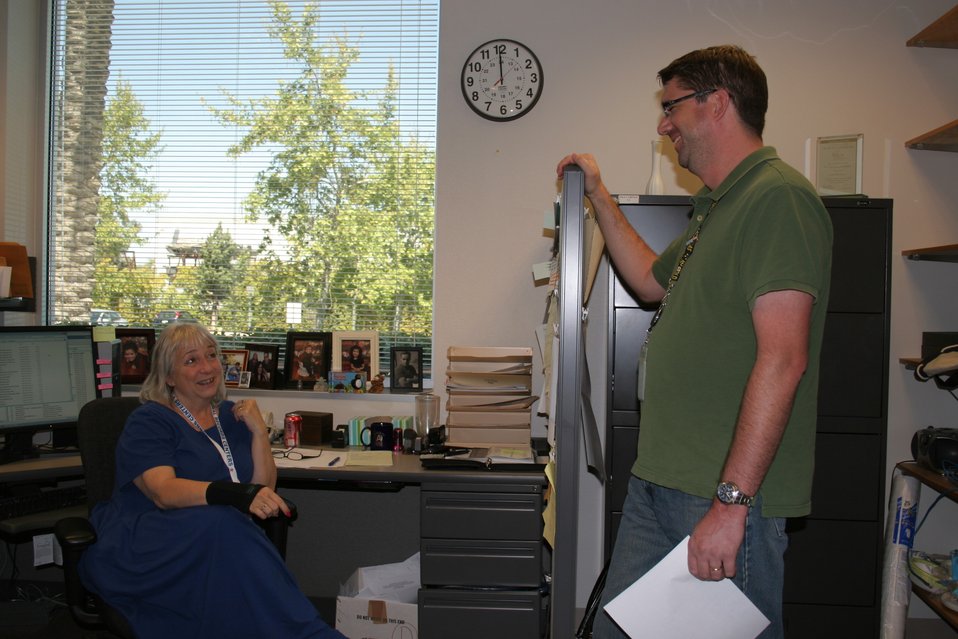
Business Support staff discuss new contracts - (l to r) Lynn R. Blackmer, Jason H. Reed; Location: Riverside Facility, Perris, CA